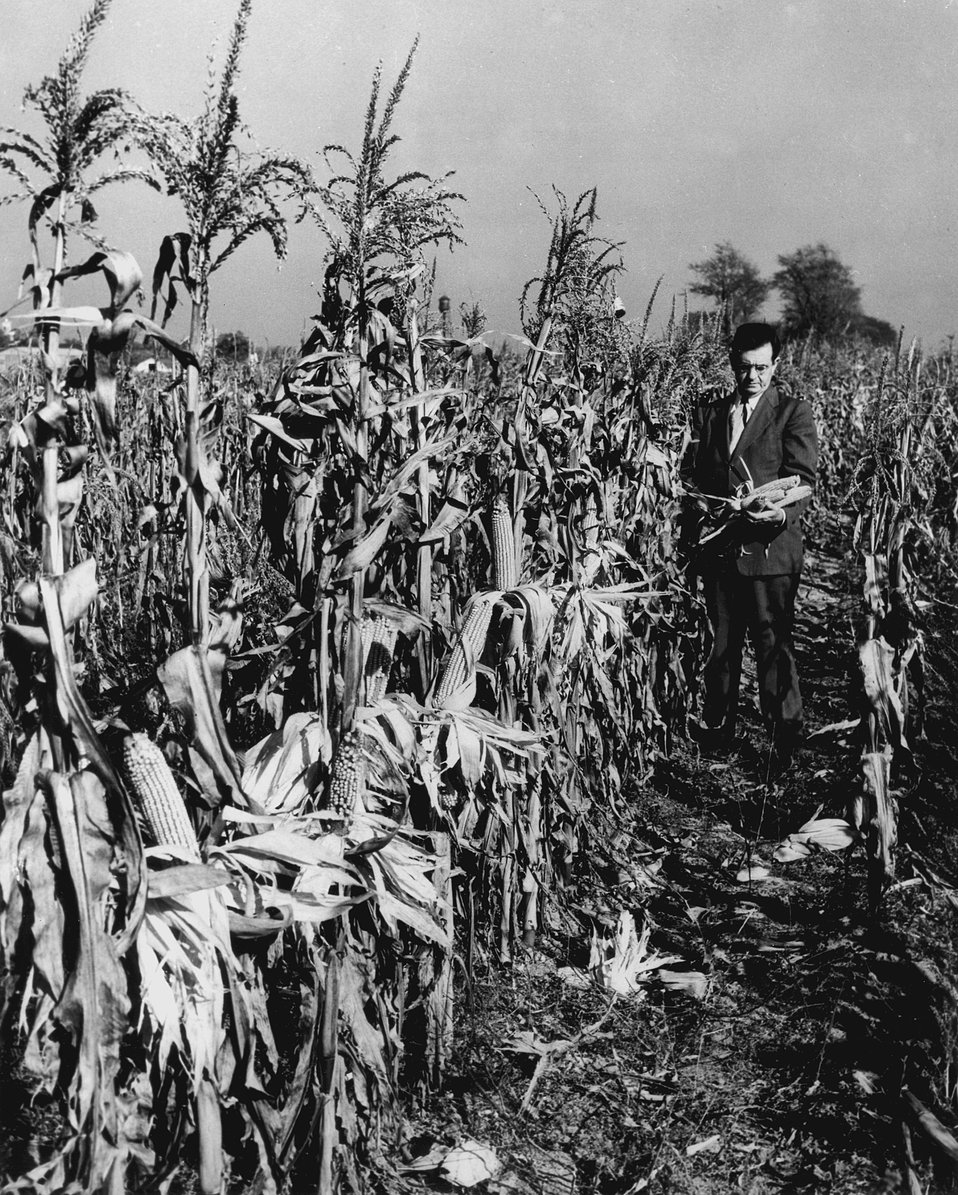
Hybrid corn between very short type and tall, producing more desirable intermediate plants about 6 feet tall. c. 1955